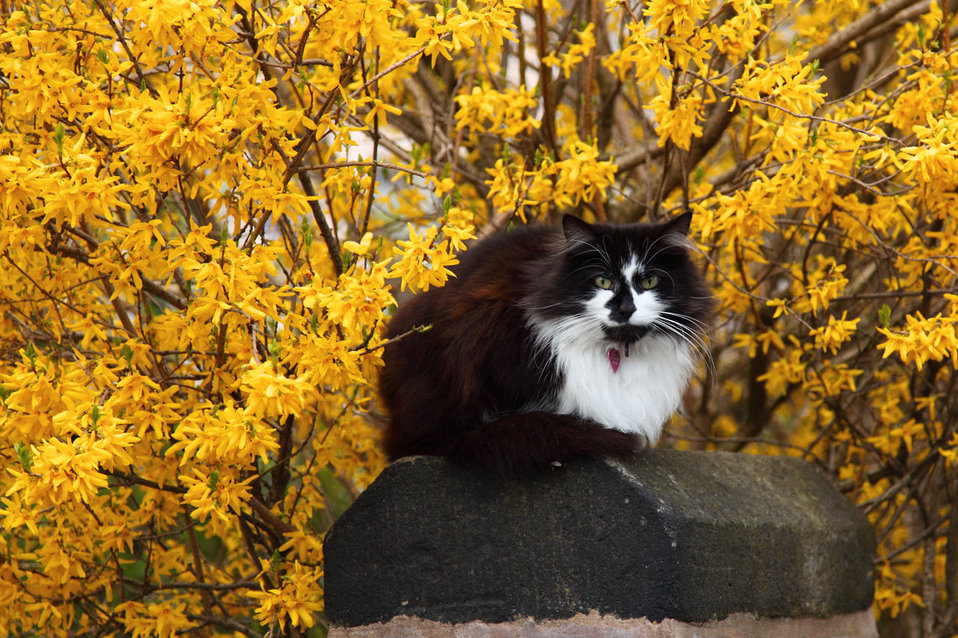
Cat with yellow flowers

Resting cat surrounded with blooming forsythia intermedia.